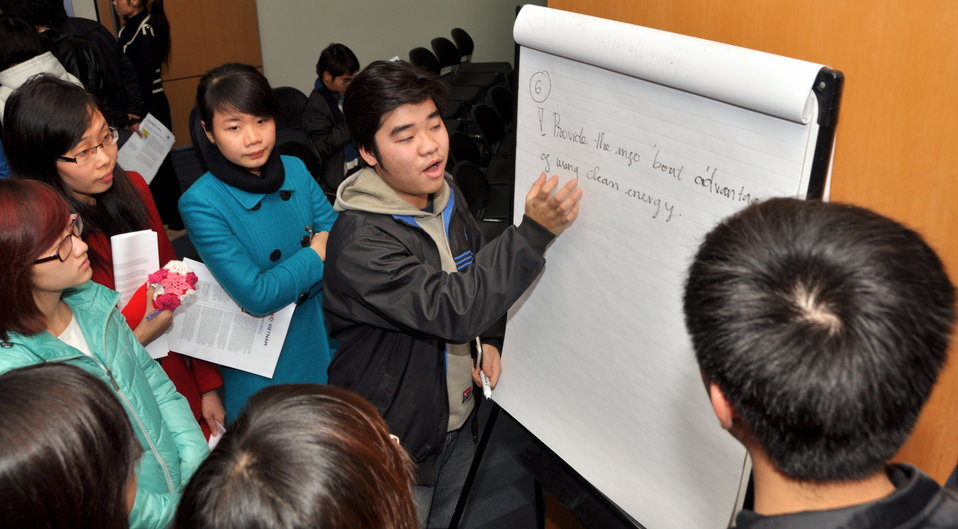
Speaker program on Climate Change and Clean Energy at the American Center

Hanoi, January 16, 2013